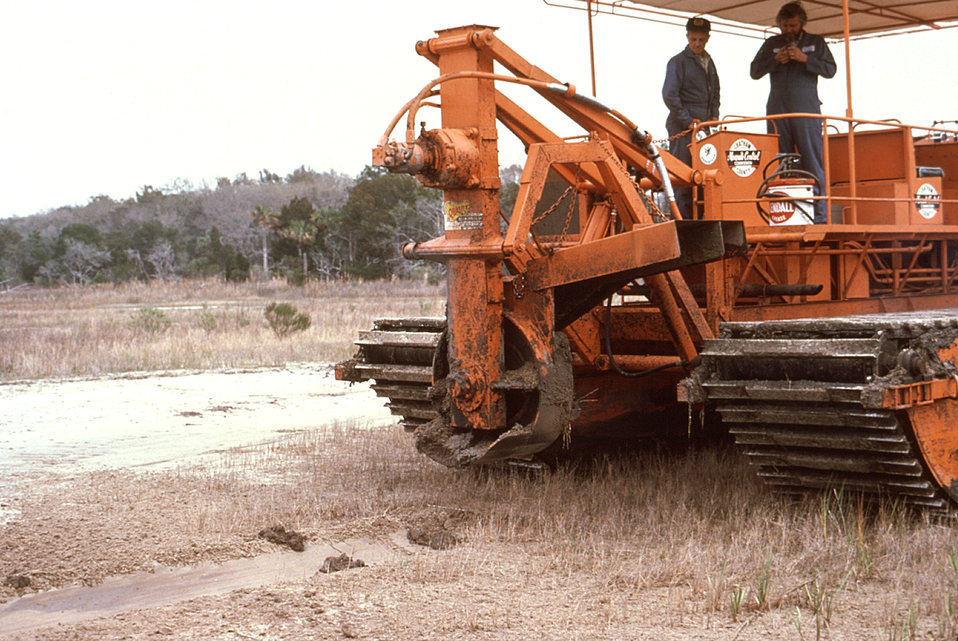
This amphibious rotary ditcher (ARD) was outfitted with a 'cutter-slinger' head, which was used in the process of creating a drainage ditch.